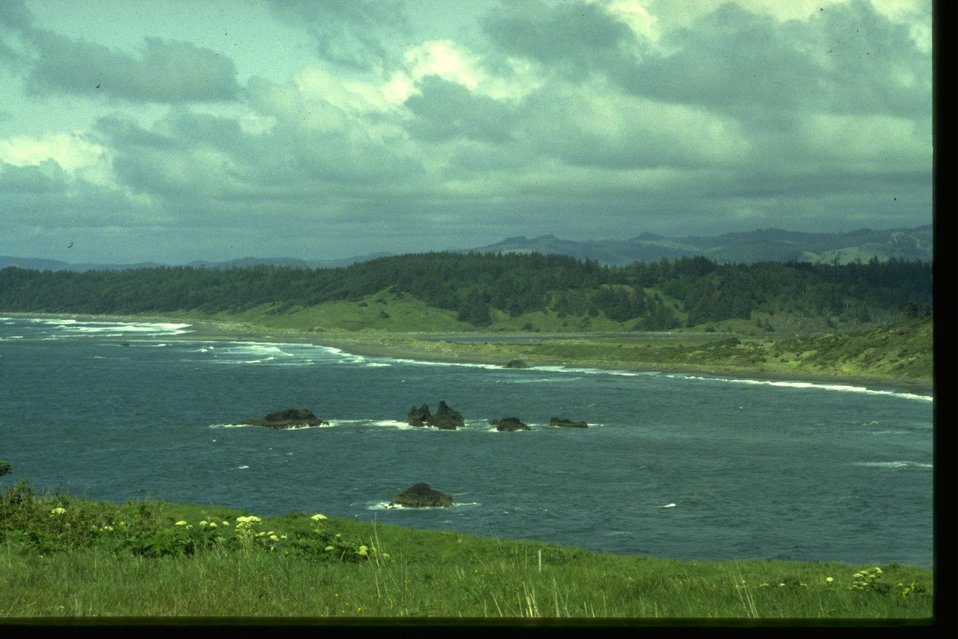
Lookingnorth at Sixes River from Cape Blanco.